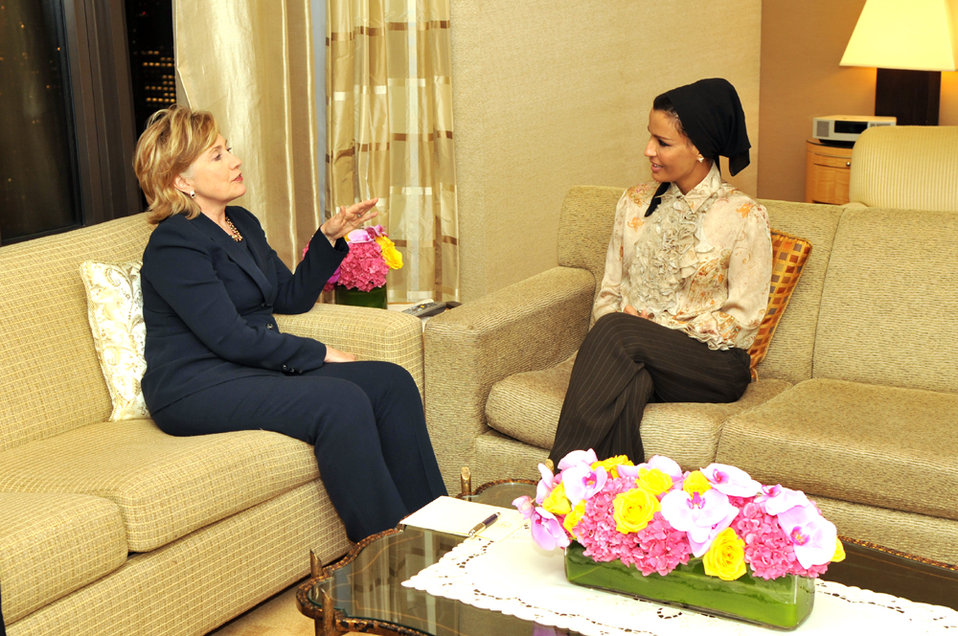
UNGA 2009: Secretary Clinton Meets With Consort of His Highness the Amir of Qatar

U.S. Secretary of State Hillary Rodham Clinton meets with The Consort of His Highness the Amir of Qatar Sheikh Moza bint Nasser Al Misnad at the Four Seasons Hotel Secretary Clinton at the Four Seasons Hotel in New York City, New York September 24, 2009.